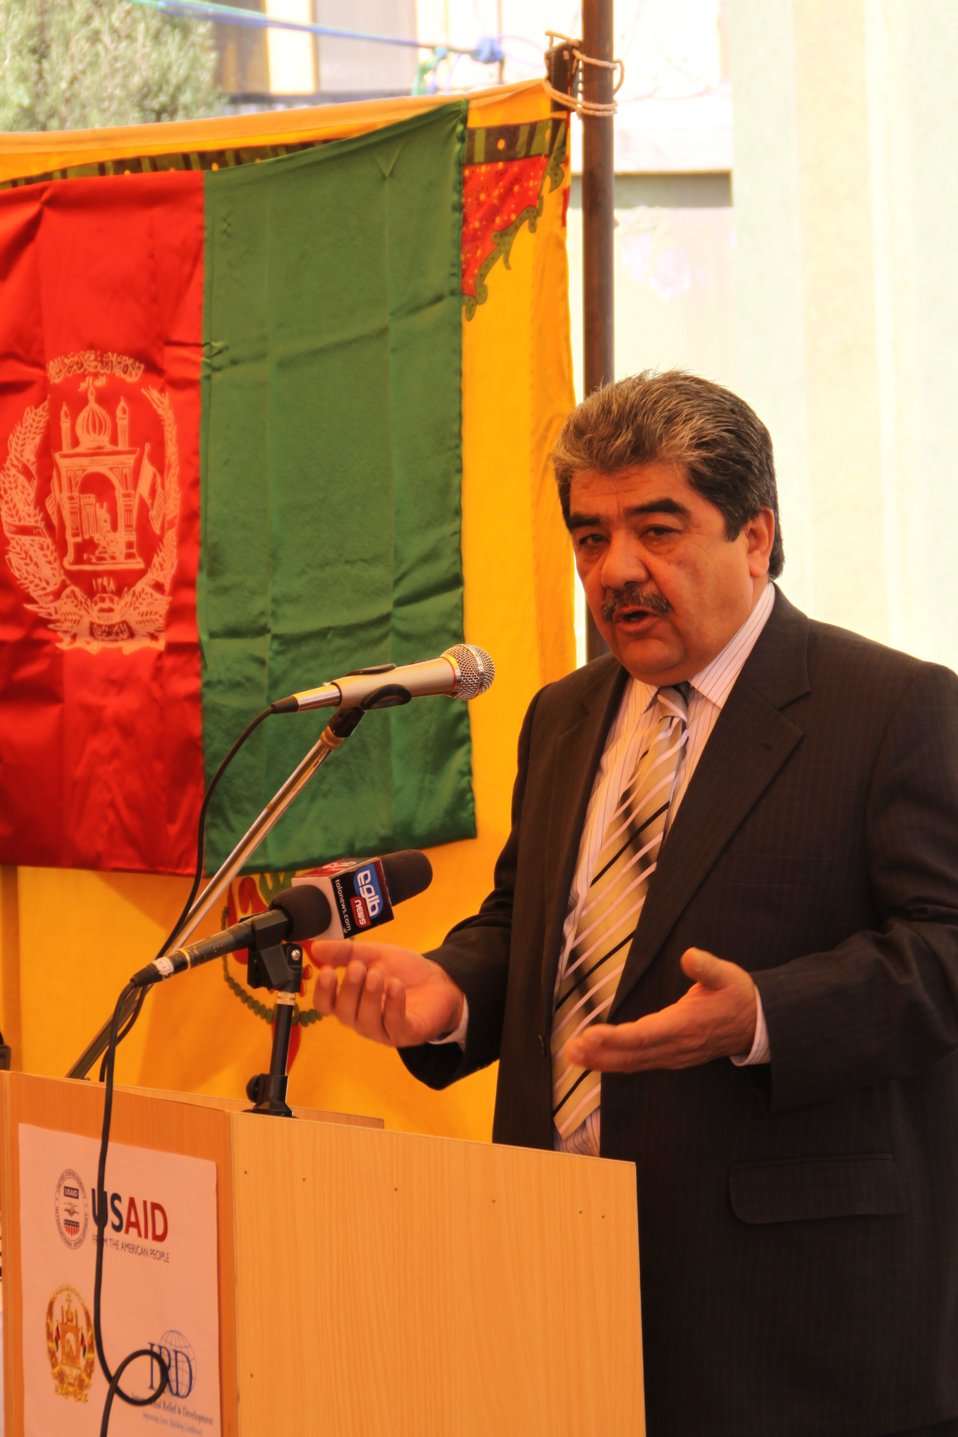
Kandahar University Students Complete Engineering Internship